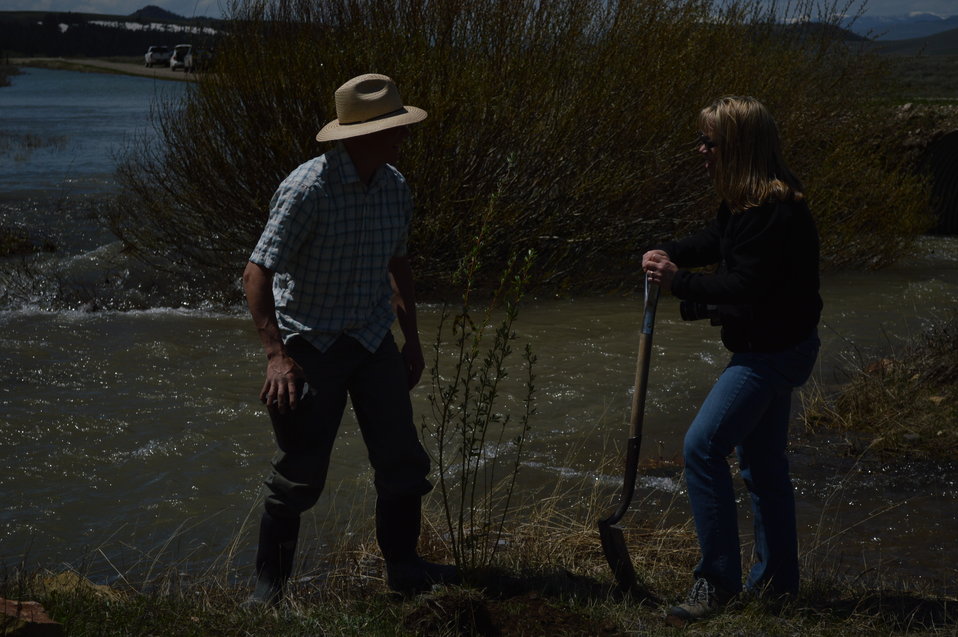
Regional Leadership Visit to Montana 2014